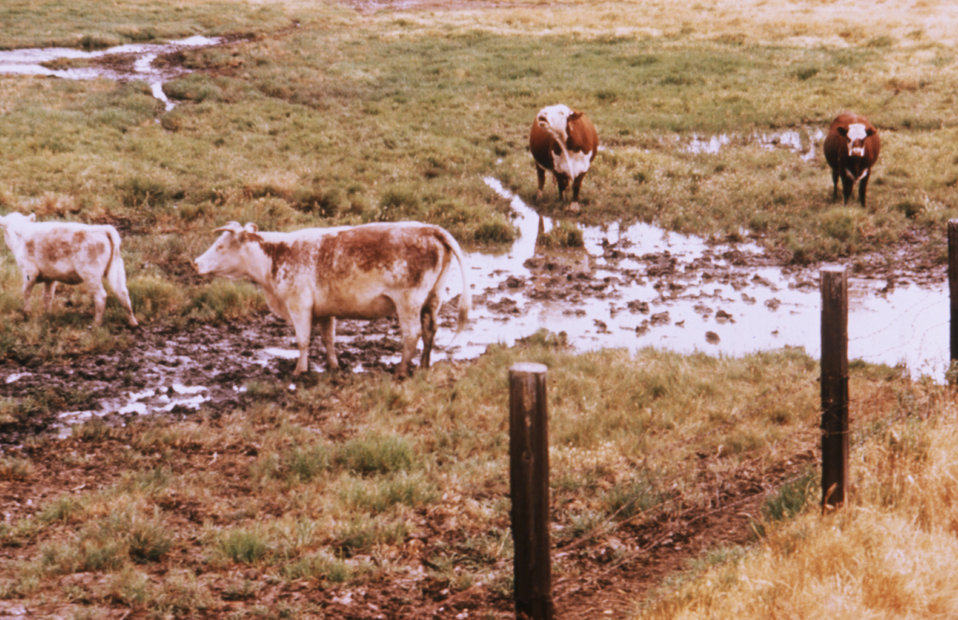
This 1976 photograph depicts cattle that are standing in water at the edge of an irrigated pasture in California.